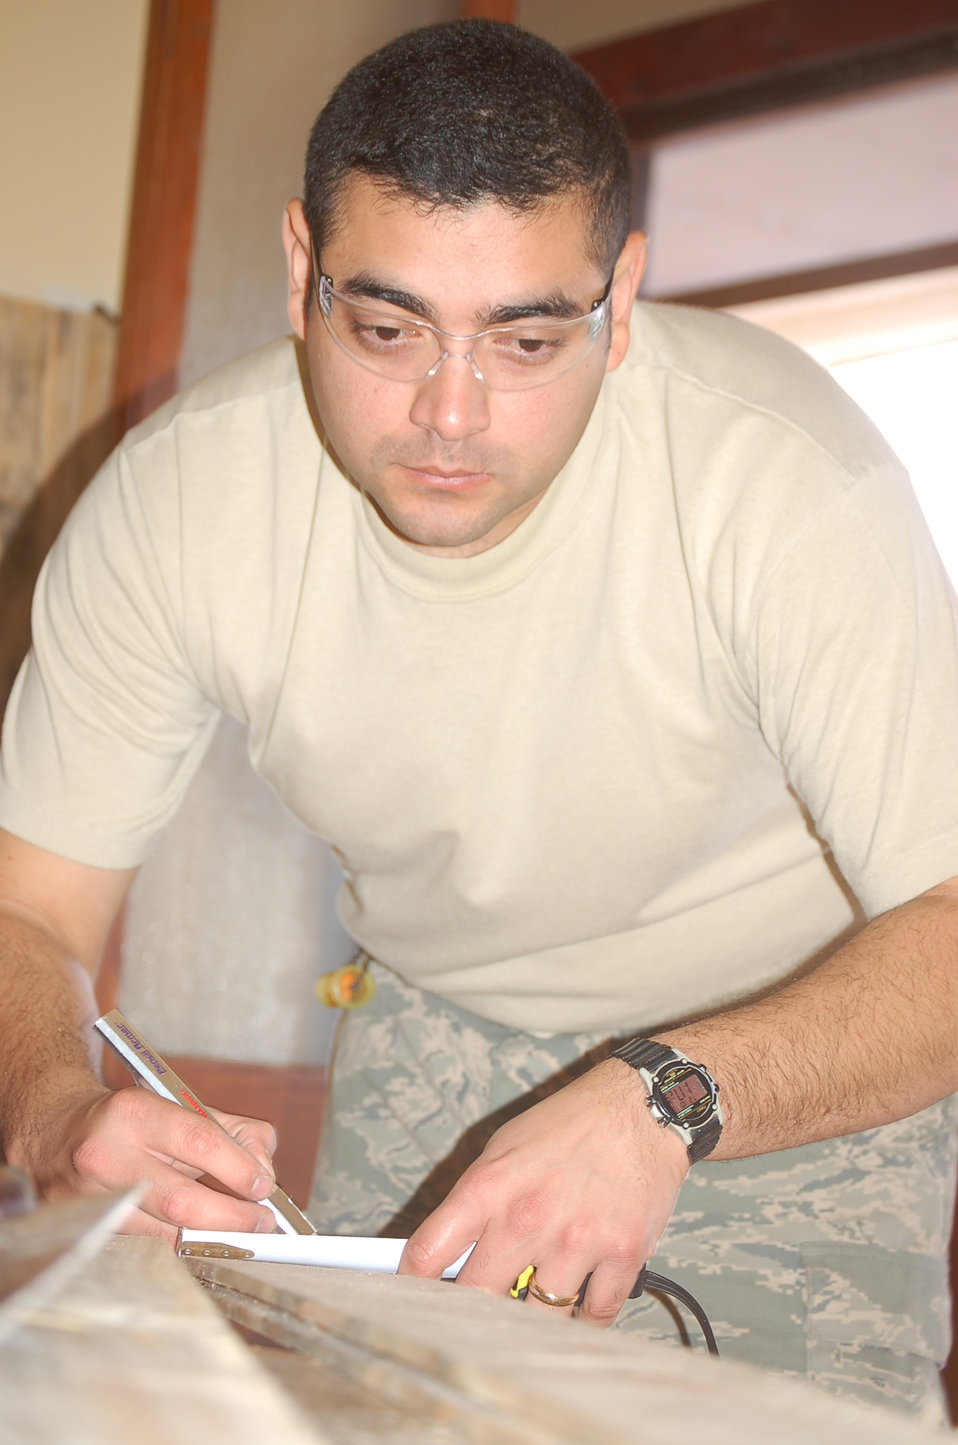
Red Horse Airmen renovate Chilean school's library

Staff Sgt. Lorenzo Lara, a structural craftsman Rapid Engineer Deployable Heavy Operational Repair Squadron Engineer from the 819th RED HORSE Squadron at Malmstrom Air Force Base, Mont., measures a wooden slat before cutting it to use as part of a library renovation project at a Chilean culinary and hotel service high school in Quilpu√©, Chile on Oct. 31. Sergeant Lara and Master Sgt. Roger Wilhelm, also from 819th RED HORSE (not pictured) finished the renovation as part of Operation Southern Partner -- a two-week Twelfth Air Force (Air Forces Southern) led event aimed at providing intensive, periodic subject matter exchanges with partner nations in the U.S. Southern Command area of focus.